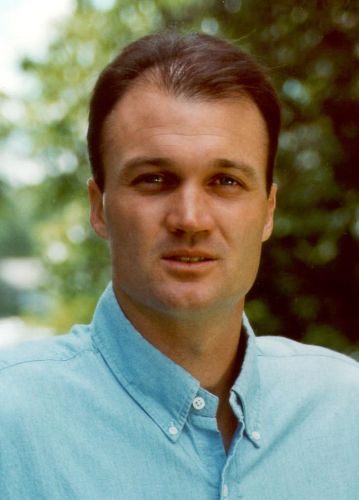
David Wheaton. Photo taken by Bruce Wheaton (father)